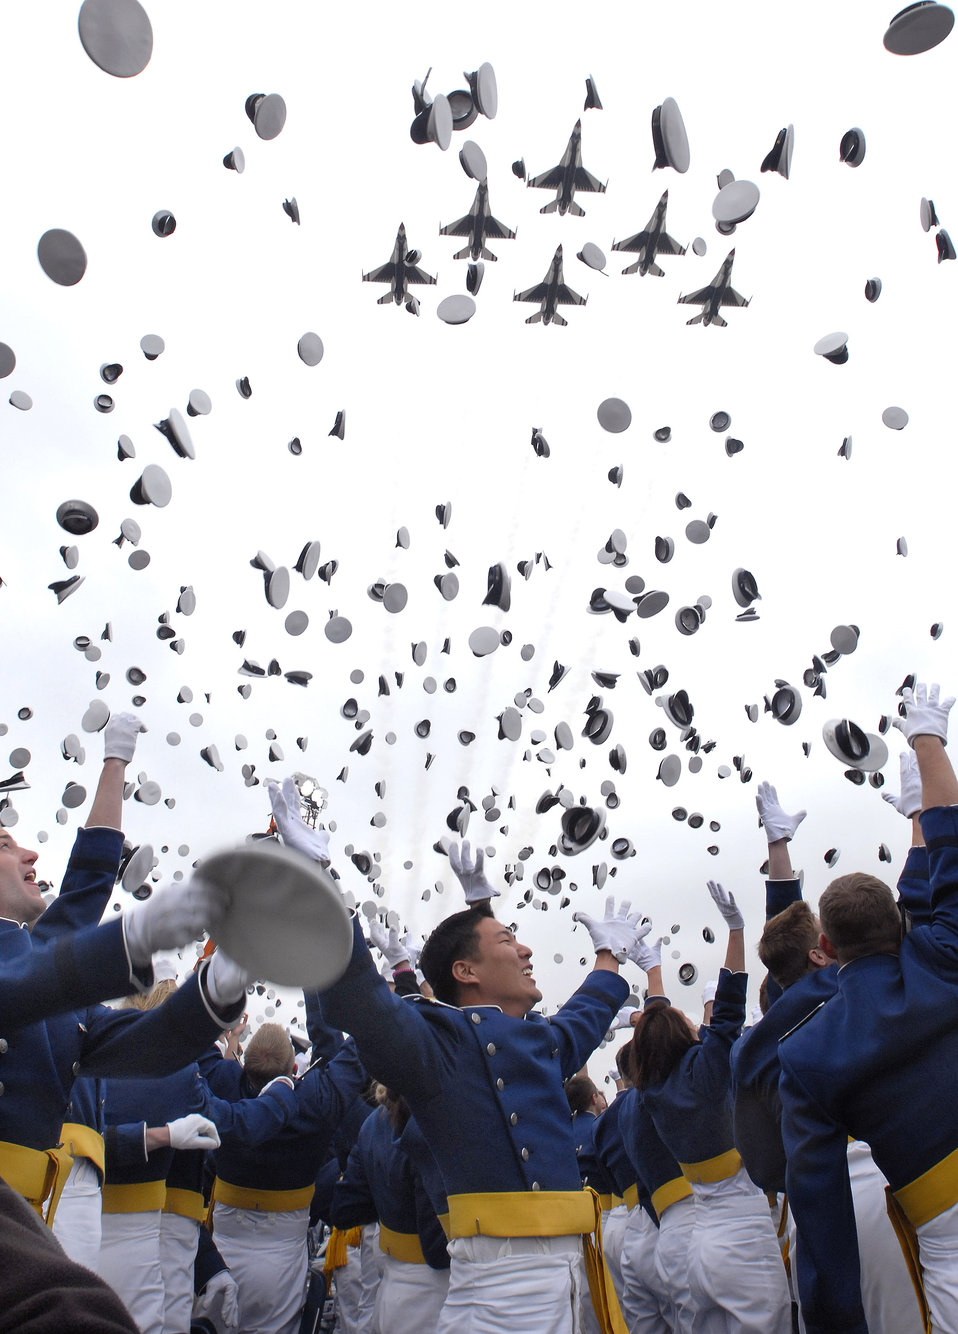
Academy Class of 2008 graduates

The Air Force Thunderbirds fly over the U.S. Air Force Academy's Falcon Stadium as 1012 newly graduated second lieutenants, members of the Class of 2008, toss their hats in the air at the conclusion of graduation ceremonies. President George W. Bush was the commencement speaker.